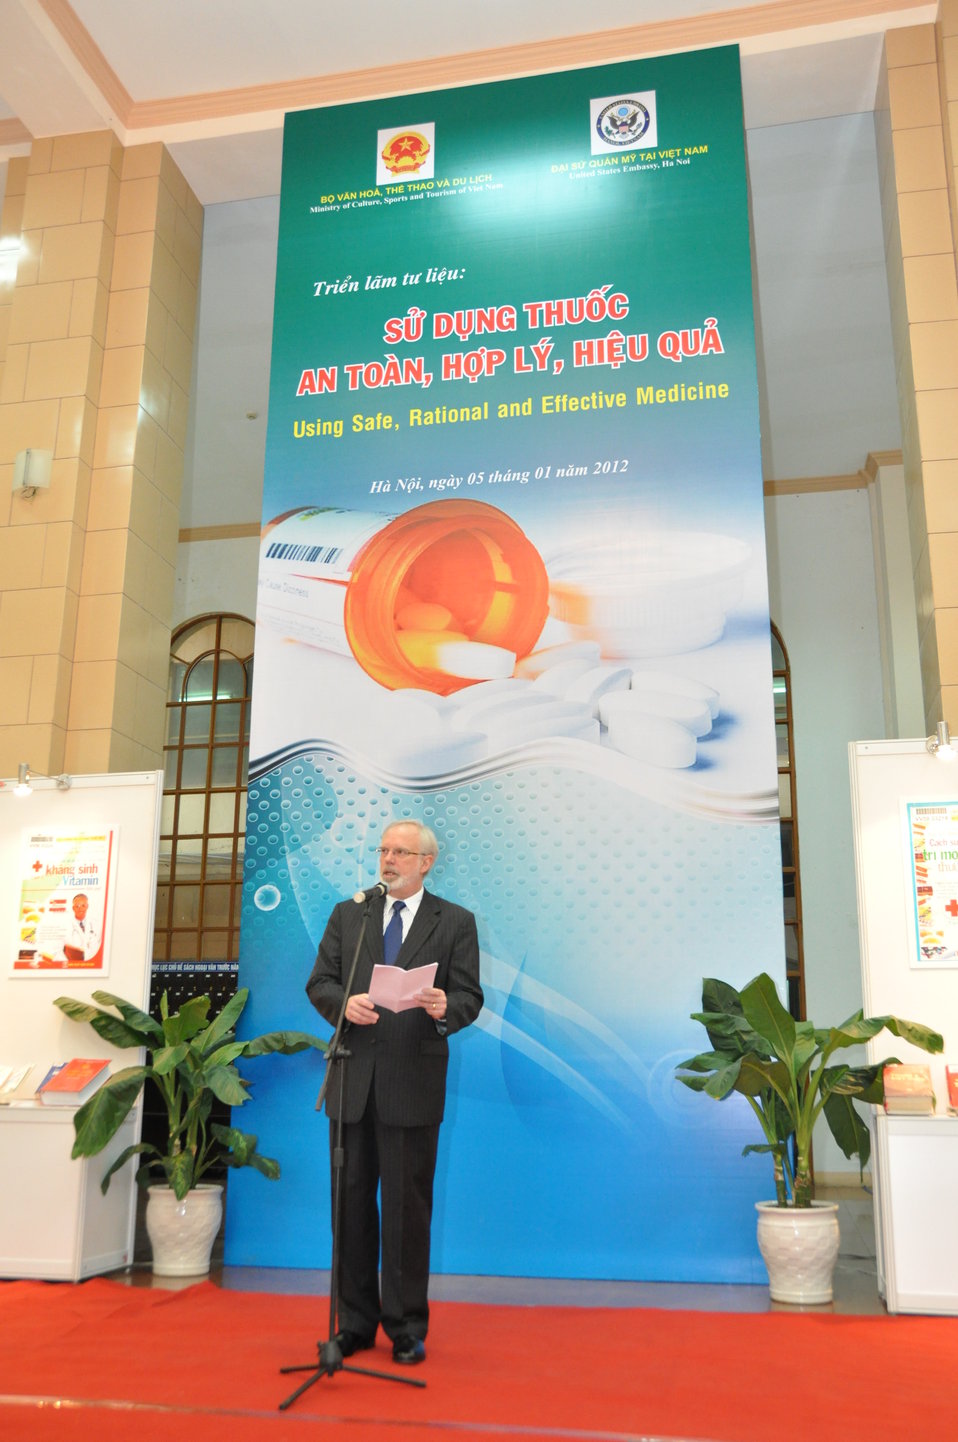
U.S. Ambassador David Shear opens safe medicine exhibition in Hanoi

Safe Medicine Exhibition